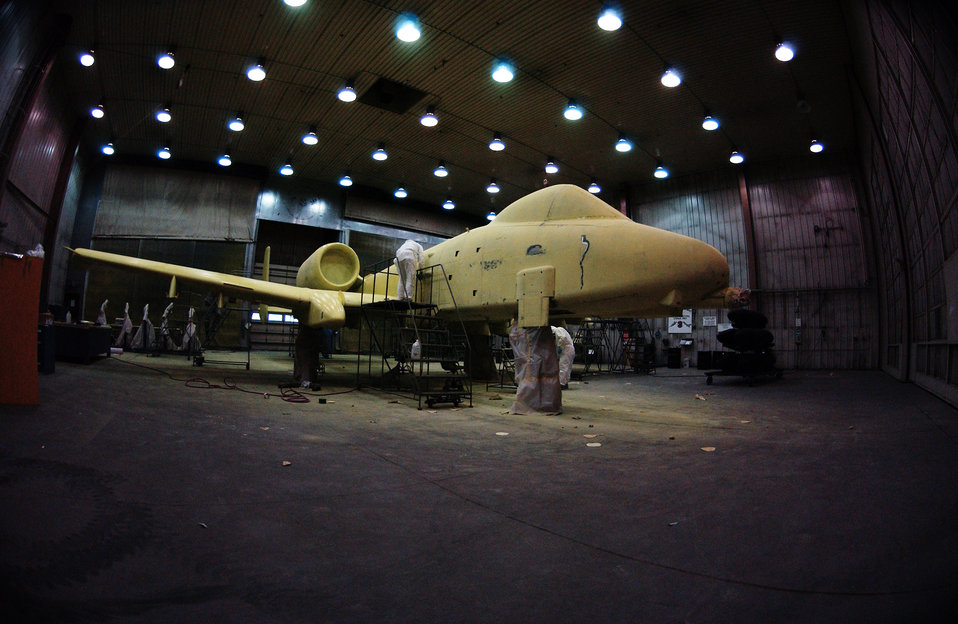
Preserving heritage

Airman 1st Class Timothy Coulson (on stand) and Airman Daniel Peters sand down the primer on an A-10 Thunderbolt II Aug. 20 at Eielson Air Force Base, Alaska, to prepare it for its base coat of paint. Members of the 354th Maintenance Squadron fabrication shop are working on restoring this A-10 to be a static display in the base's Heritage Park. This aircraft will be a permanent reminder of the 355th Fighter Squadron's presence here before its deactivation in 2007.